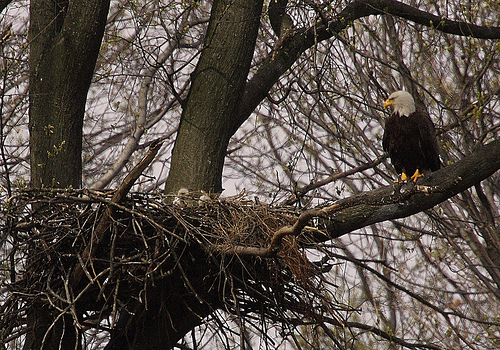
Bald eagle with young at John Heinz National Wildlife Refuge, Philadelphia, PA.